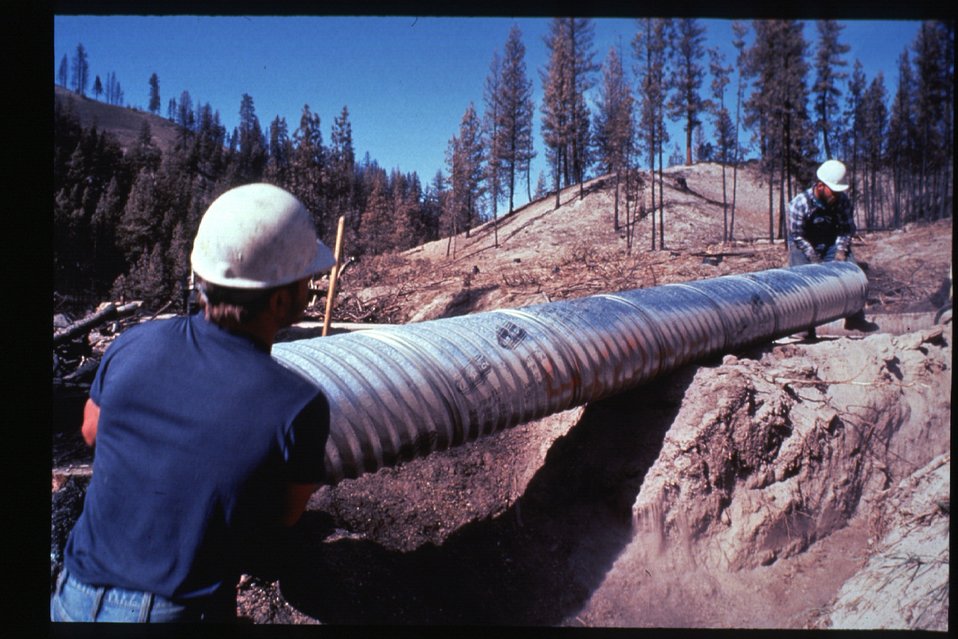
Boise Foothills Fire Danskin Mountains and South Fork of Boise River Wild Fire Fighter Four River Field Office LSRD Lower Snake River District